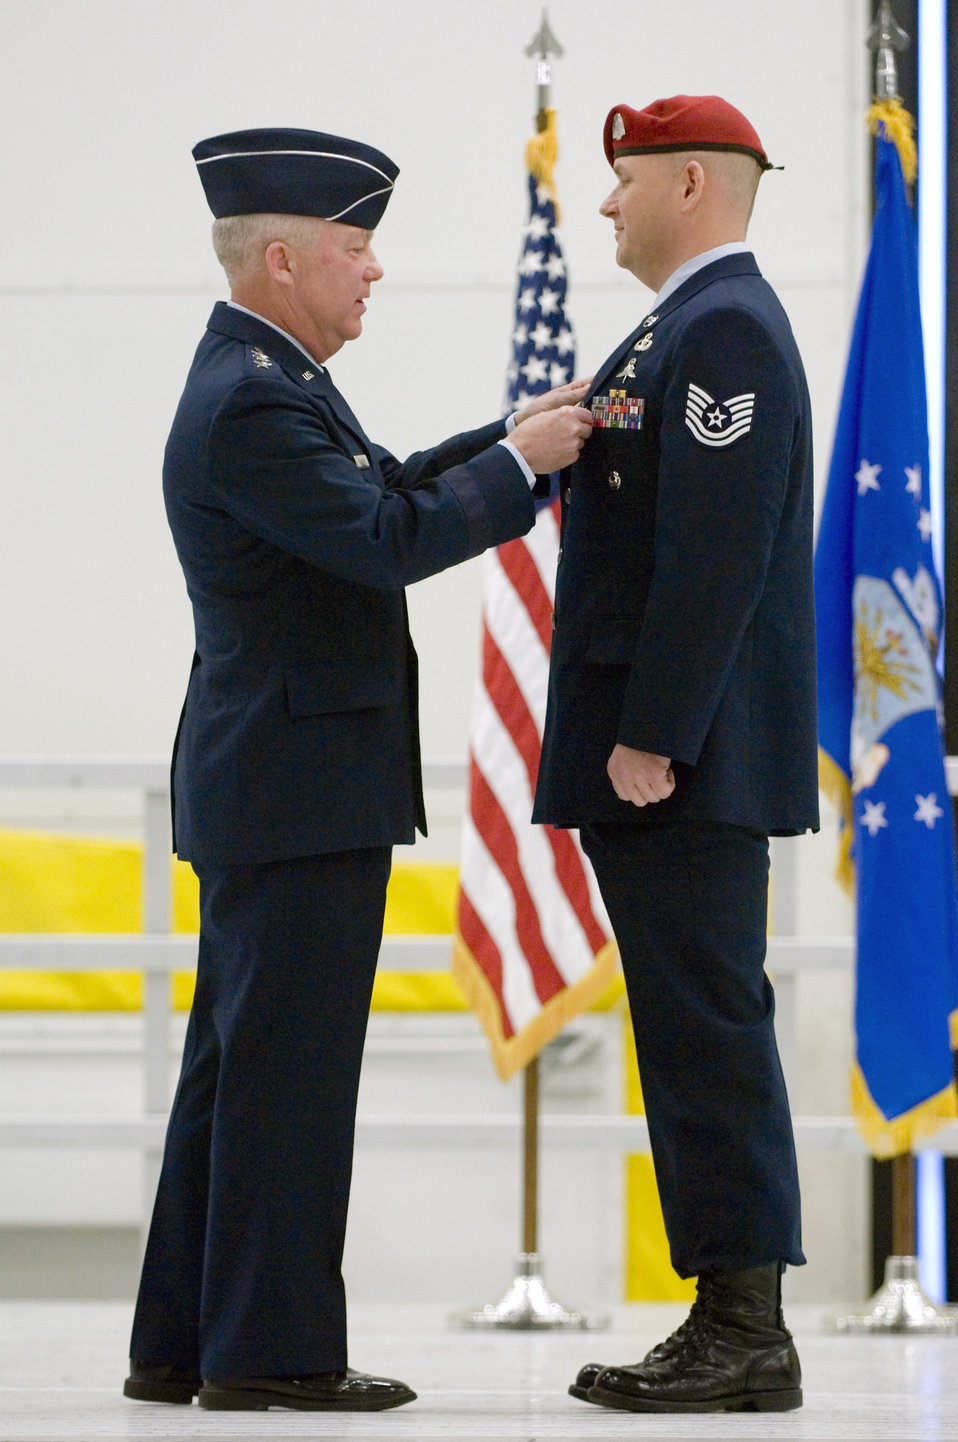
McChord combat controllers receive medals

Lt. Gen. Donald C. Wurster pins the Silver Star on Tech. Sgt. Scott Innis during a Dec. 18 medal ceremony at McChord Air Force Base, Wash. General Wurster is the Air Force Special Operations Command commander. Sergeant Innis is assigned to the 22nd Special Tactics Squadron. The Silver Star, the nation's third highest decoration for valor, was presented first to Sergeant Innis for his actions during a firefight with enemy forces in Afghanistan during spring 2006. Sergeant Innis also received a Bronze Star with Valor and an Air Force Combat Action Medal for his actions during his unit's 2007 deployment to Southwest Asia.